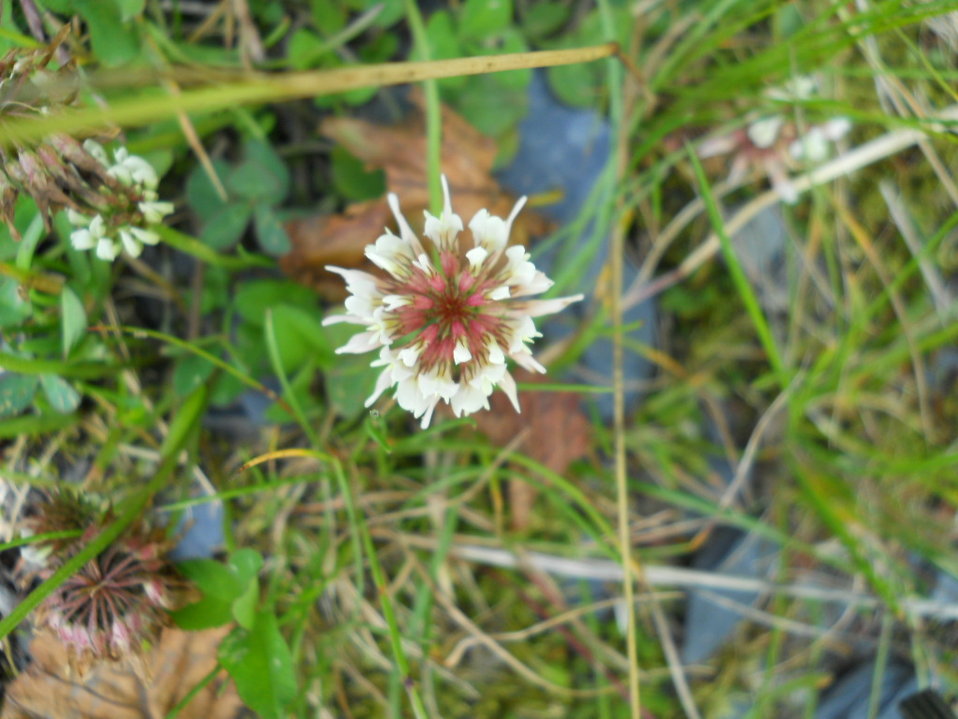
Clover Up Close

Credit: USFWS
Photo taken by a Salmon Camp participant during a nature photography activity.

Source and Contact: Kodiak National Wildlife Refuge